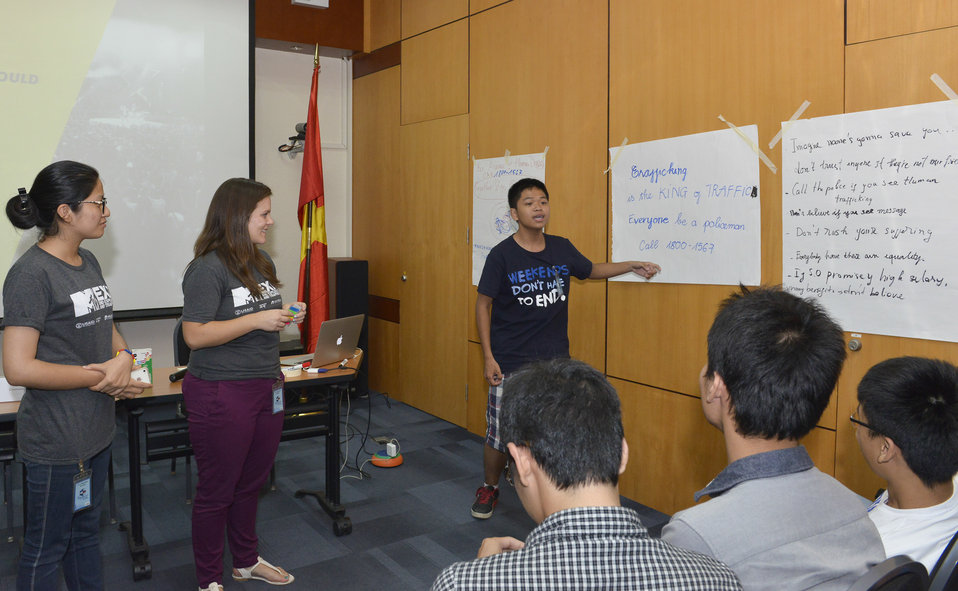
MTV Exit Talk to Engage Students in the Fight against Human Trafficking

Hanoi. June 5, 2014.